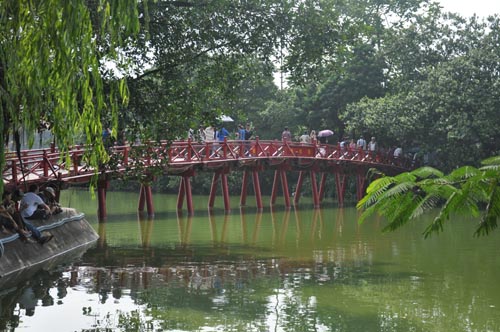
Hanoi celebrates 1,000 years as capital of Vietnam.